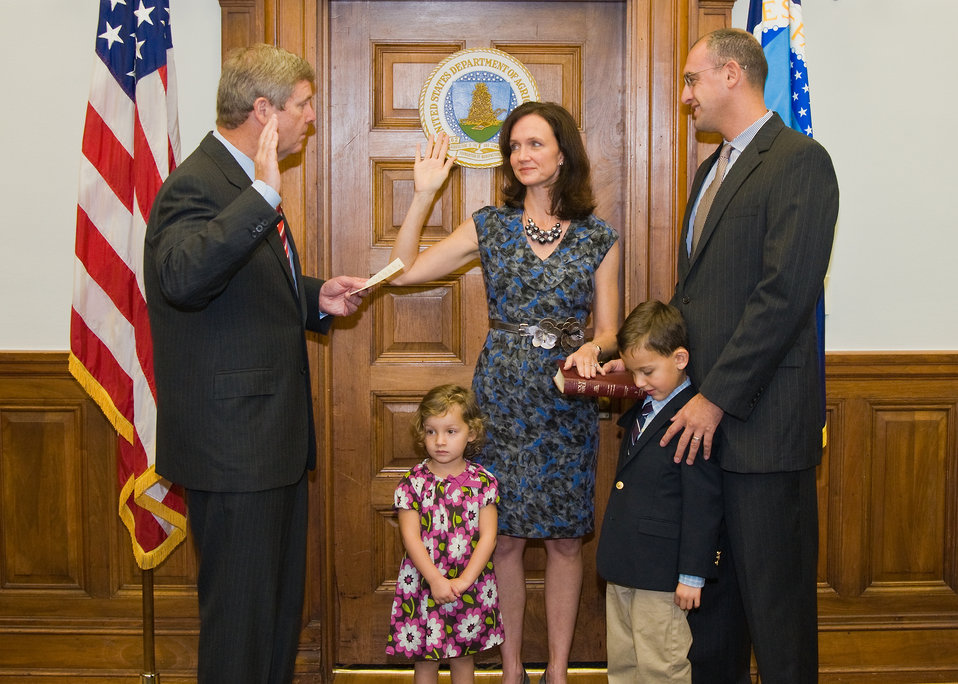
Agriculture Secretary Tom Vilsack appoints Dr. Elisabeth Hagan as Undersecretary, Food Safety during a swearing-in ceremony at the United States Department of Agriculture, Monday, October 4, 2010. Dr. Hagan’s husband Dr. Daniel Gabbay, daughter Nora and son Ned accompanied her at the ceremony. USDA Photo 10di1513-11 by Bob Nichols.